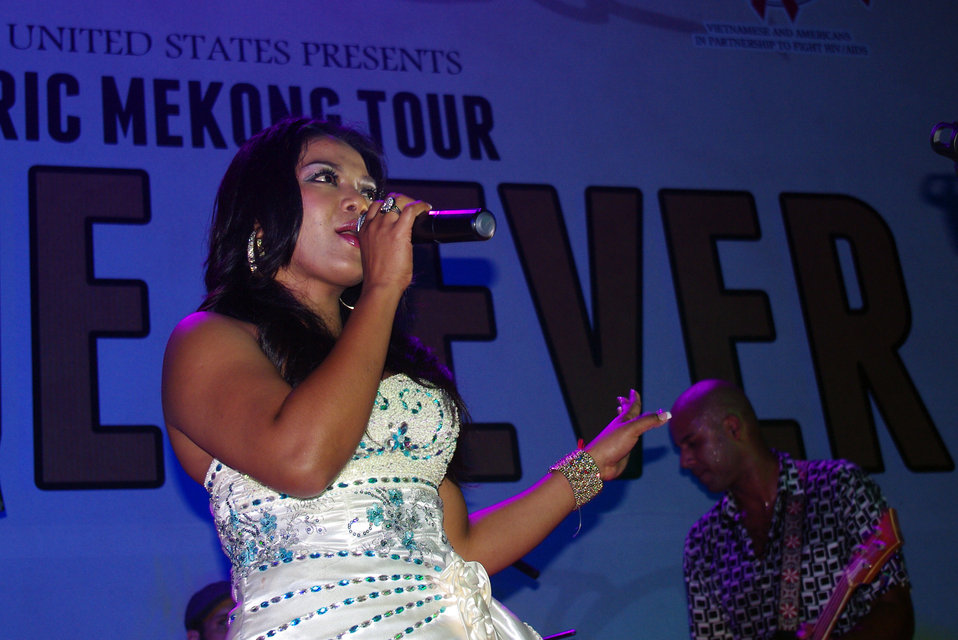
PEPFAR, U.S. Embassy Host Dengue Fever Concert in Hanoi